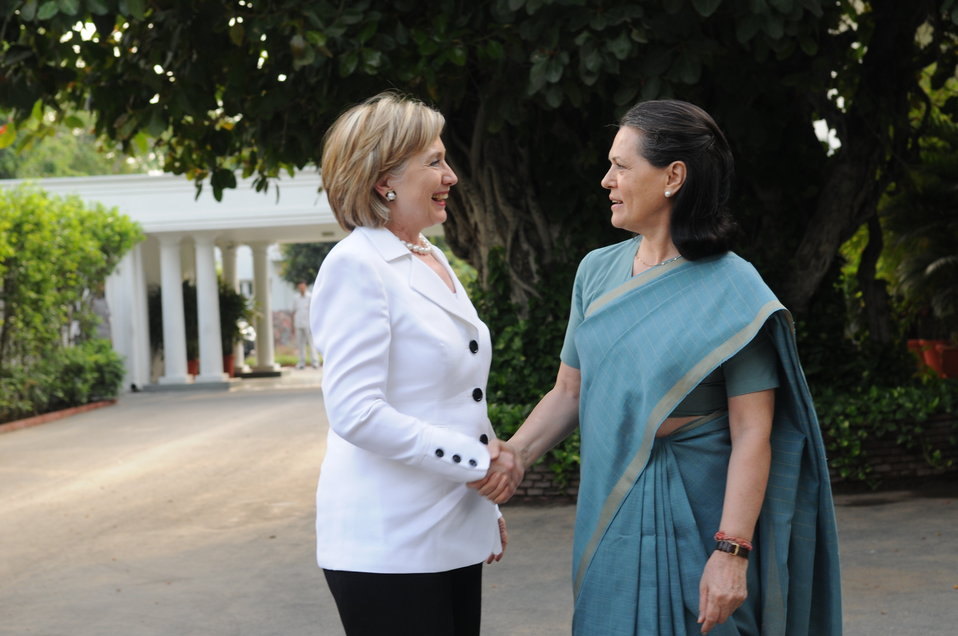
Secretary Clinton Meets With Indian Congress Party President

President of the Indian Congress Party Sonia Gandhi welcomes U.S. Secretary of State Hillary Rodham Clinton to her residence in New Delhi, India July 29, 2009.